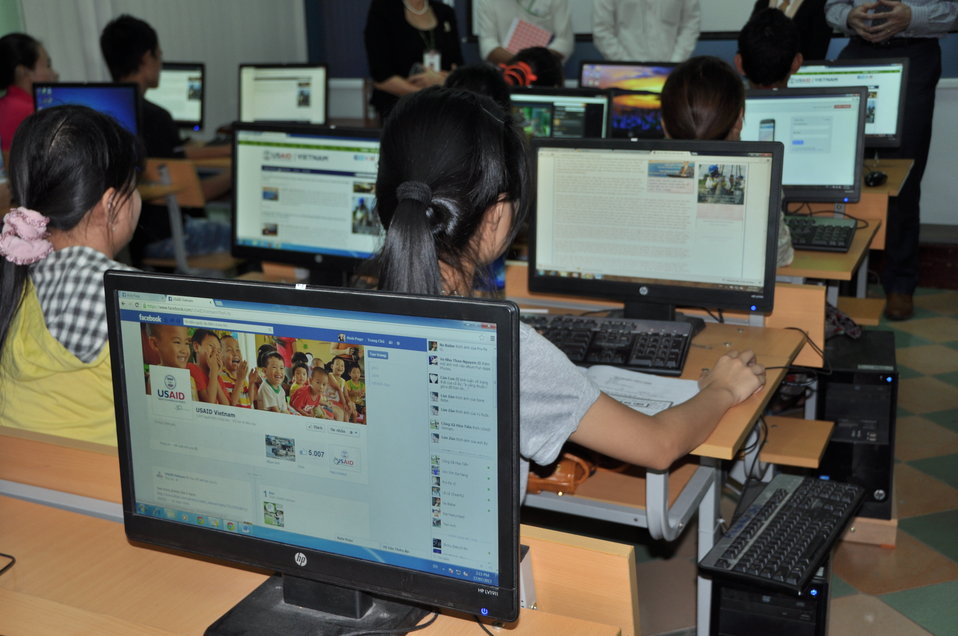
USAID Visits IT Training Program for People with Disabilities at Dong A University

Danang, Vietnam
July 17, 2013